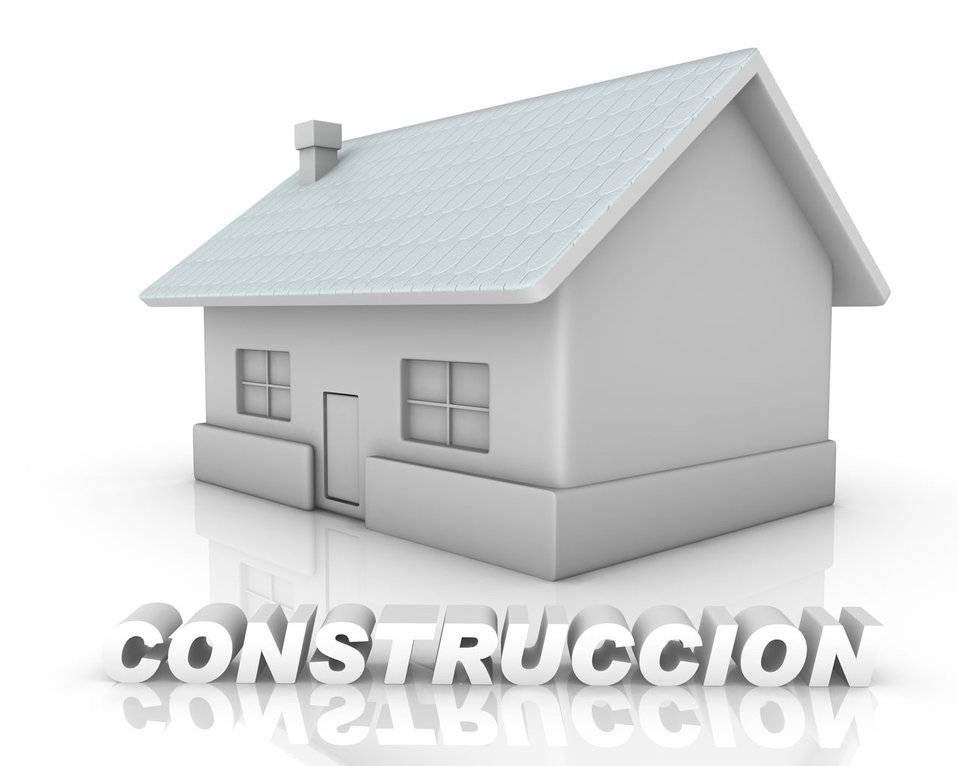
Construction

Modeling 3d house with letters on white background.